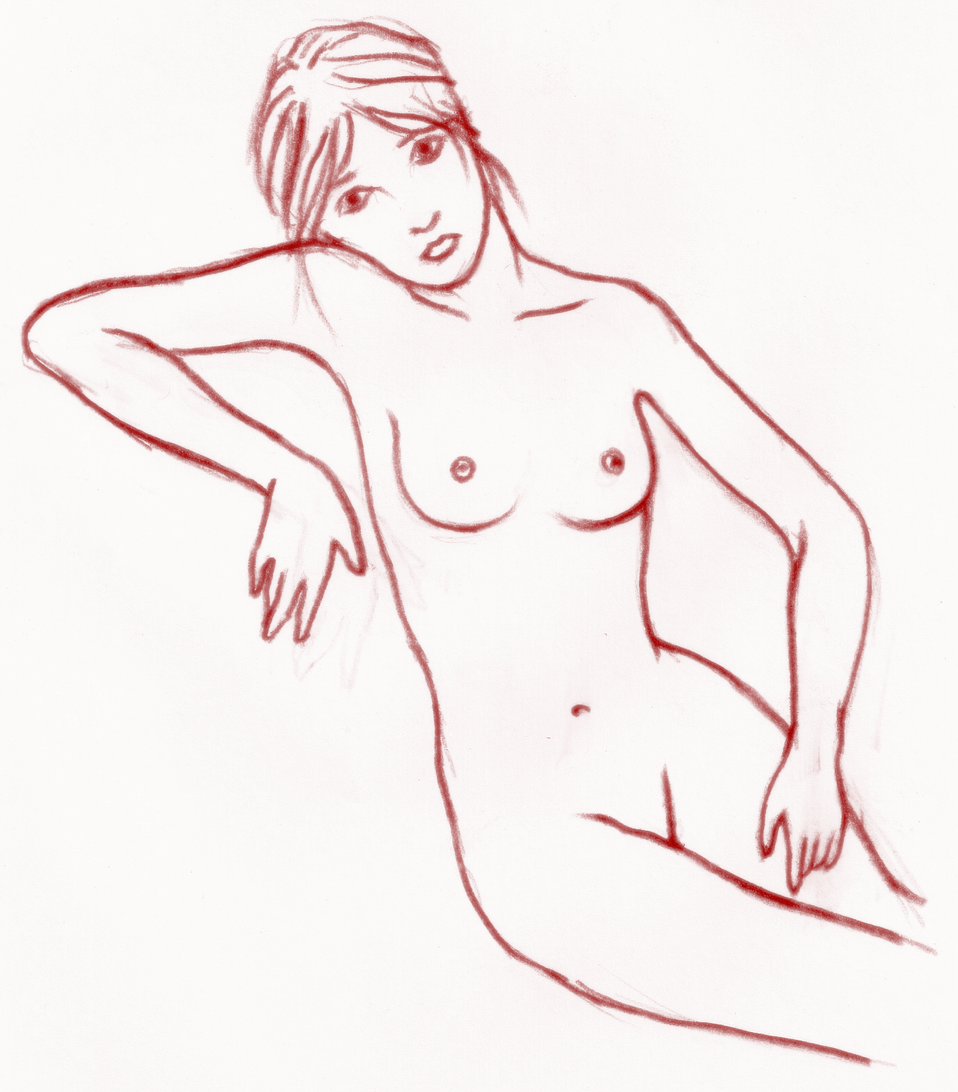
Sketch of a nude